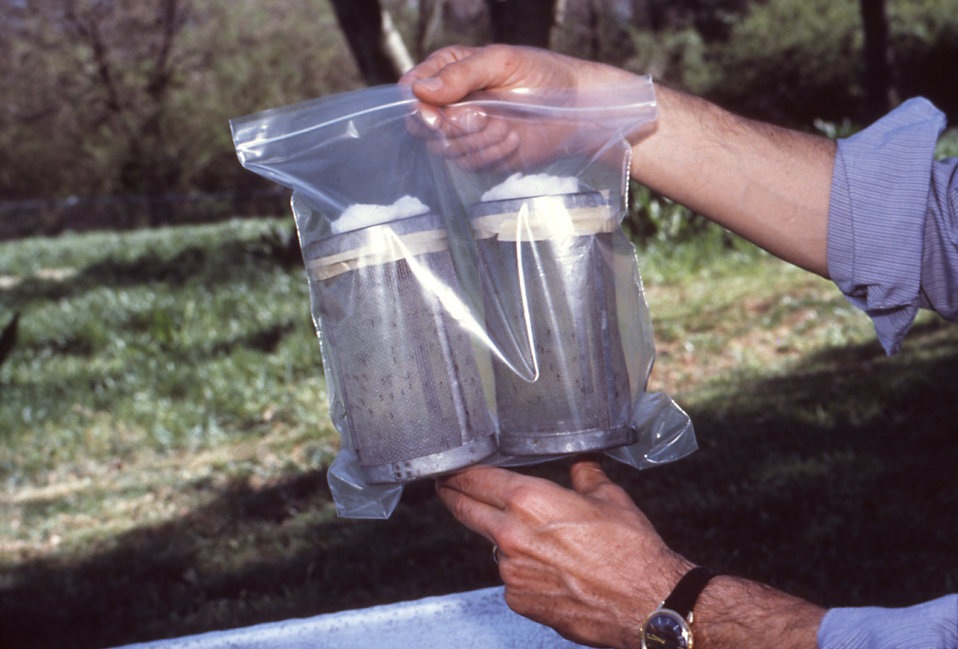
This 1981 photograph depicted two bioassay cages being readied for shipment after having been used to collect a catch of mosquitoes from the environment.